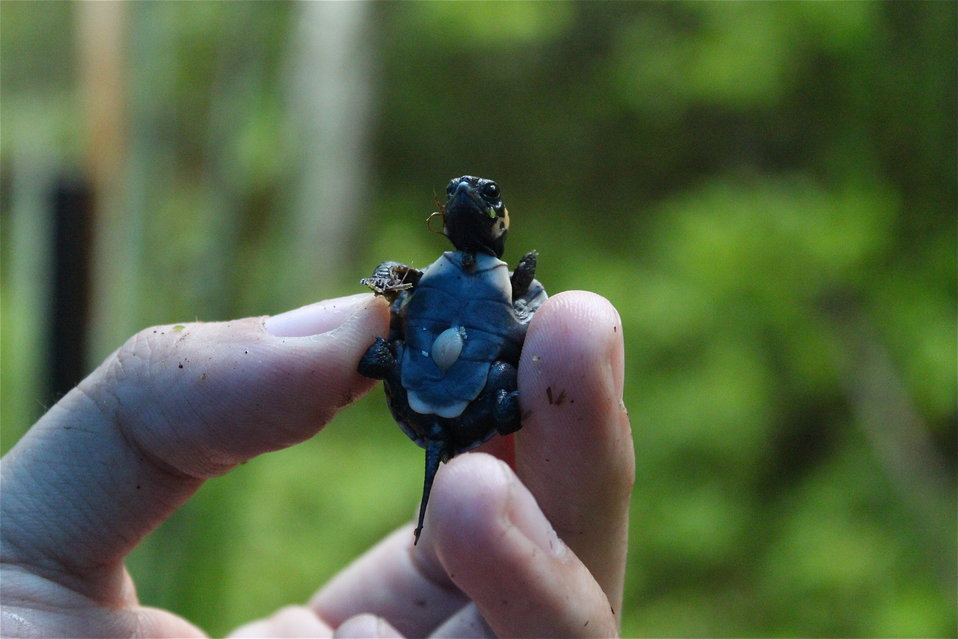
Bog turtle

Juvenile bog turtle with yolk sack still attached.